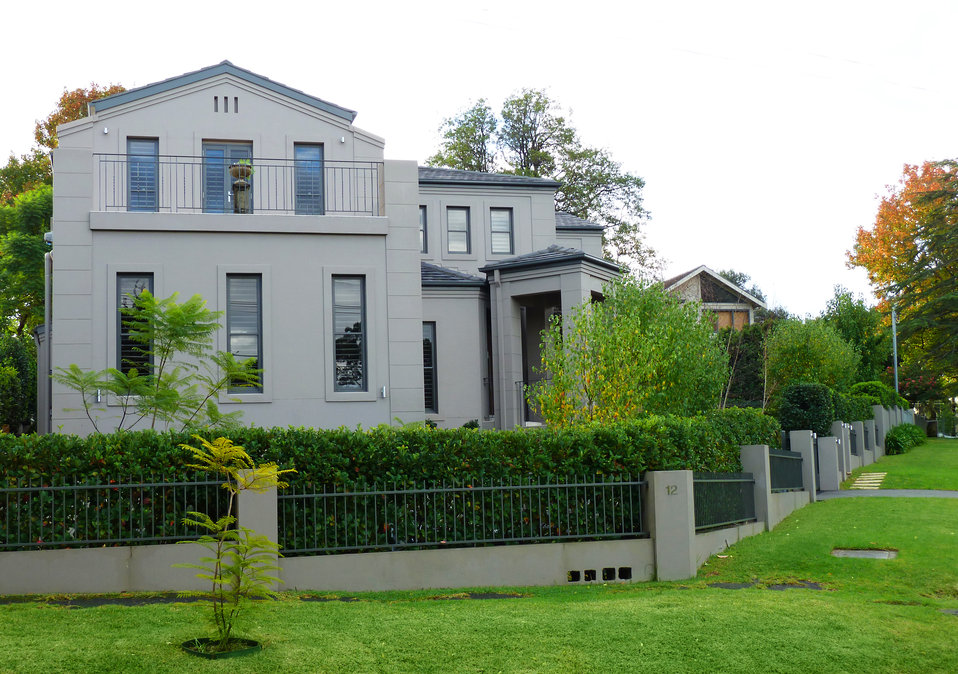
12 Valley Road, Lindfield, New South Wales, Australia.